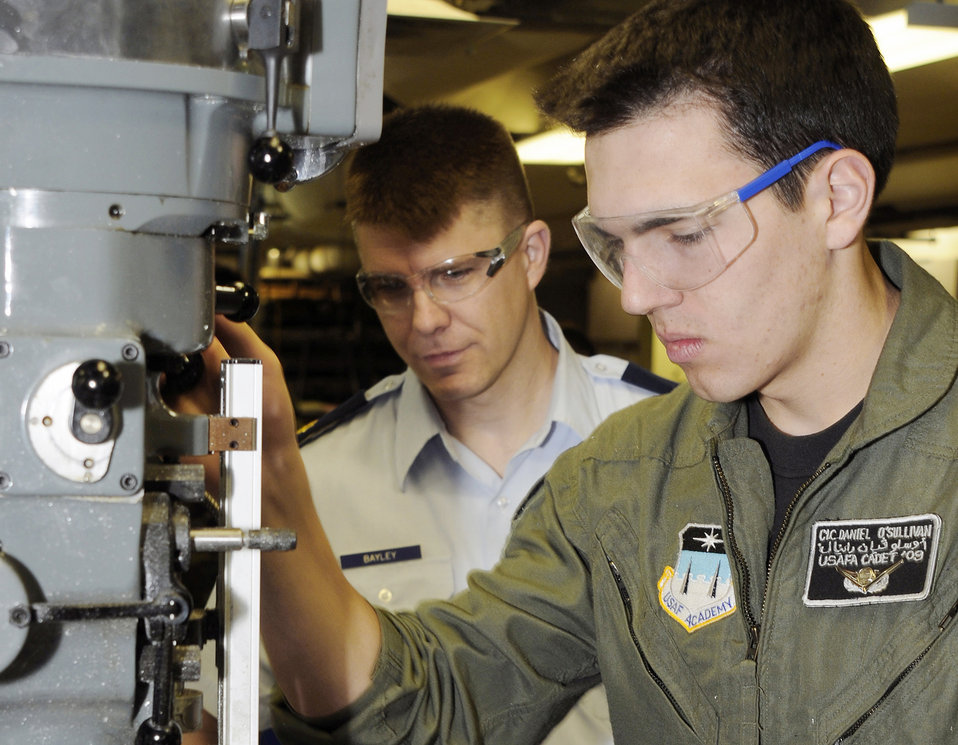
Academy ranked No. 1 among Western 4-year schools

Maj. Douglas Bayley assists Cadet 1st Class Daniel O'Sullivan with a project in the U.S. Air Force Academy's astronautics laboratory Feb. 2. The Air Force Academy recently was ranked as the top undergraduate school in the western United States by U.S. News & World Report magazine. Major Bayley is an instructor with the Academy's Department of Astronautics. Cadet Sullivan graduated in May and now attends undergraduate pilot training at Columbus Air Force Base, Miss.